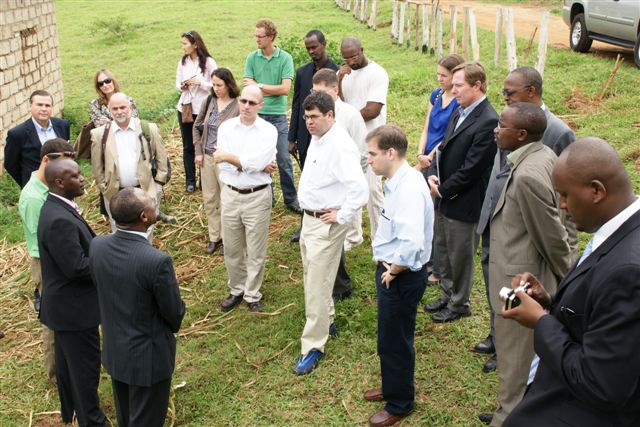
Deputy Secretary Neal Wolin’s trip to Africa 2009

Deputy Secretary Wolin is briefed on the African Development Bank’s One Cow per Poor Family program and the role small dairy farmers play in Rwanda’s economy at a United States Agency for International Development (USAID) Project outside of Kigali, Rwanda.